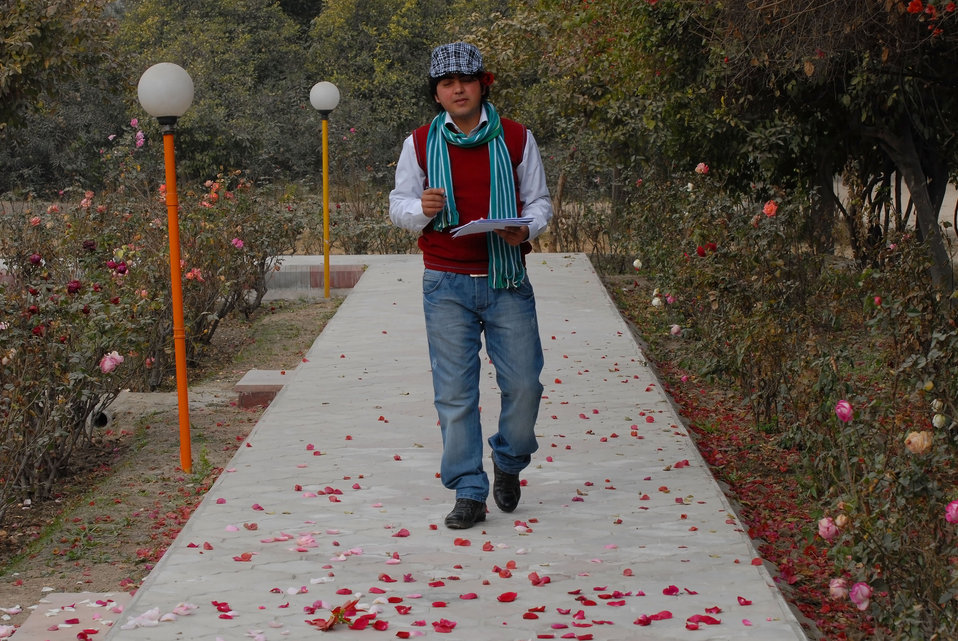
'On the Road' in Nangarhar Province